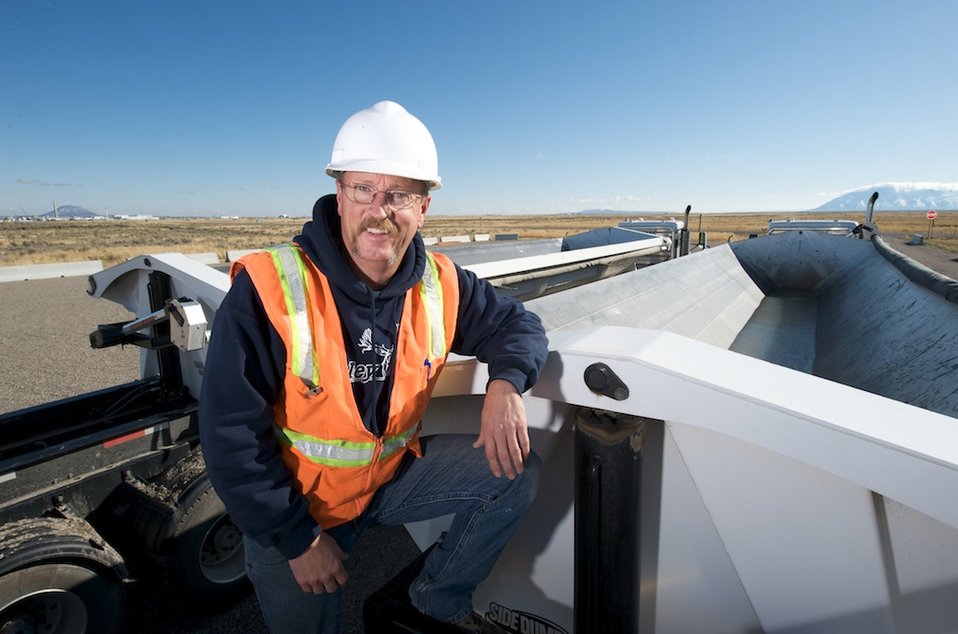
INL - Richard Knox

Heavy equipment operator Richard Knox, a Recovery Act hire, at the INL on Tuesday, October 6, 2009.